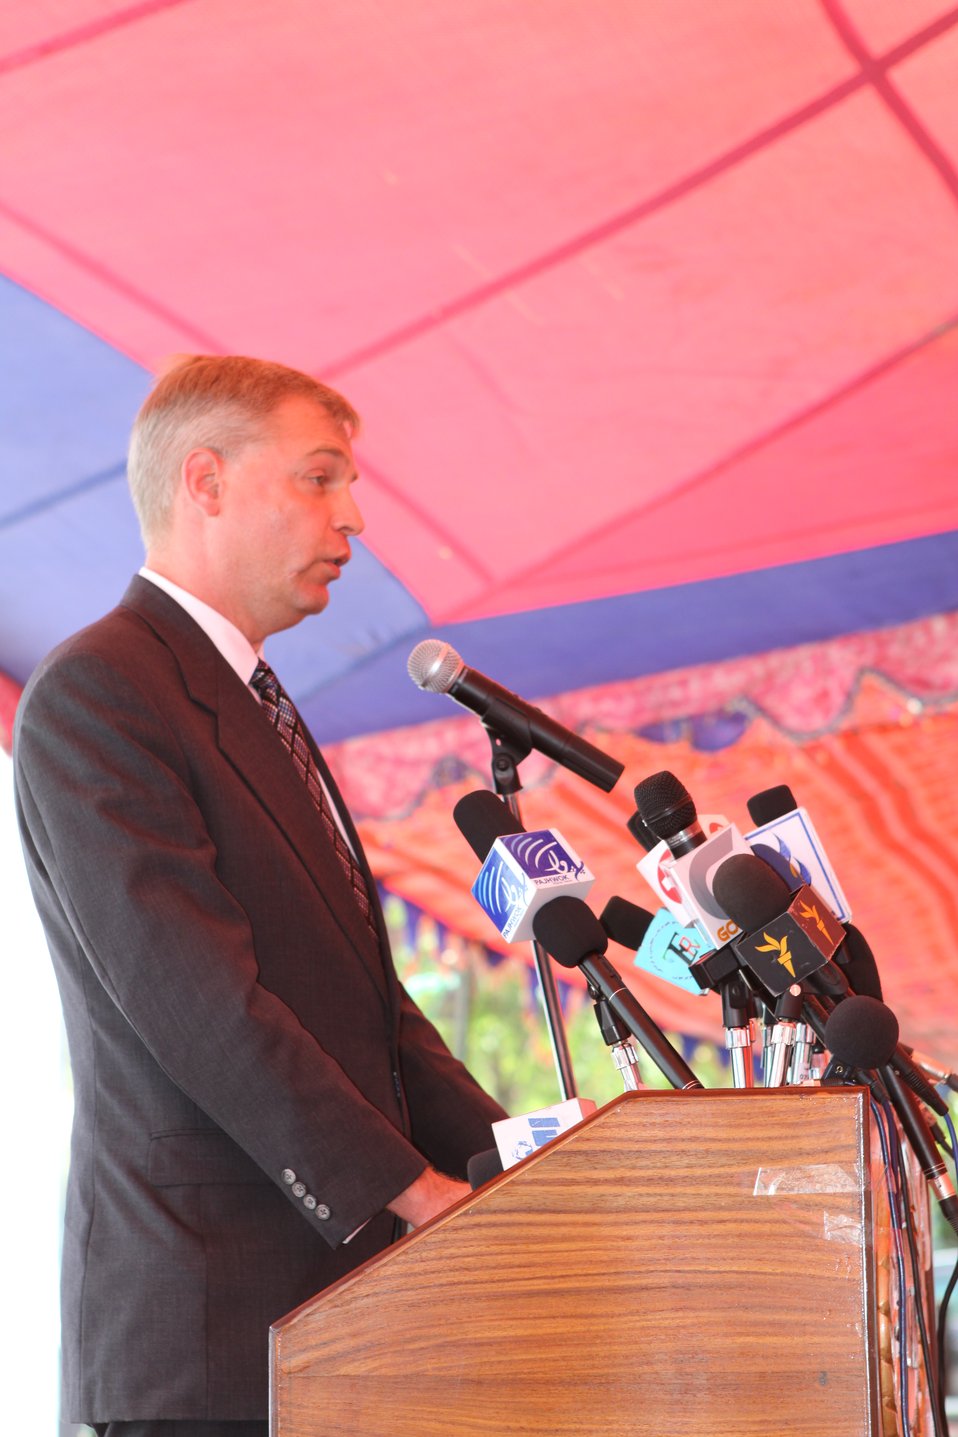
100522 ATVI Graduation 109